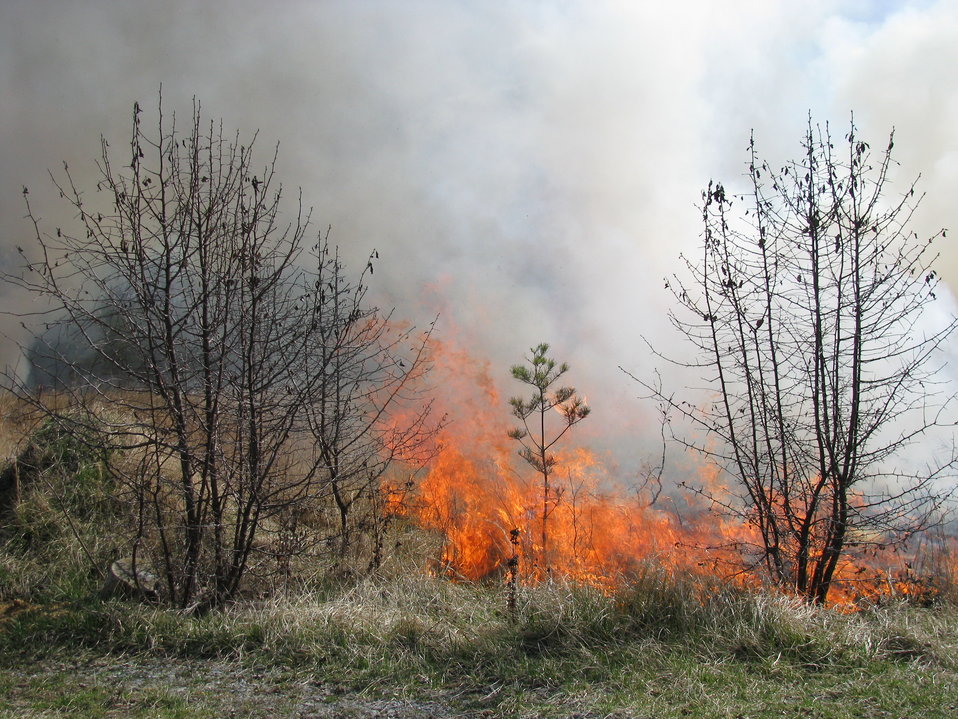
Controlled Burn Maintains Grassland

Laurel, Maryland, April 14, 2012: A controlled burn consumes small trees and shrubs encroaching on a grassland field. The burn, at Patuxent Research Refuge, was to maintain native grasslands, remove woody vegetation, and control invasive species such as Korean Lespedeza.